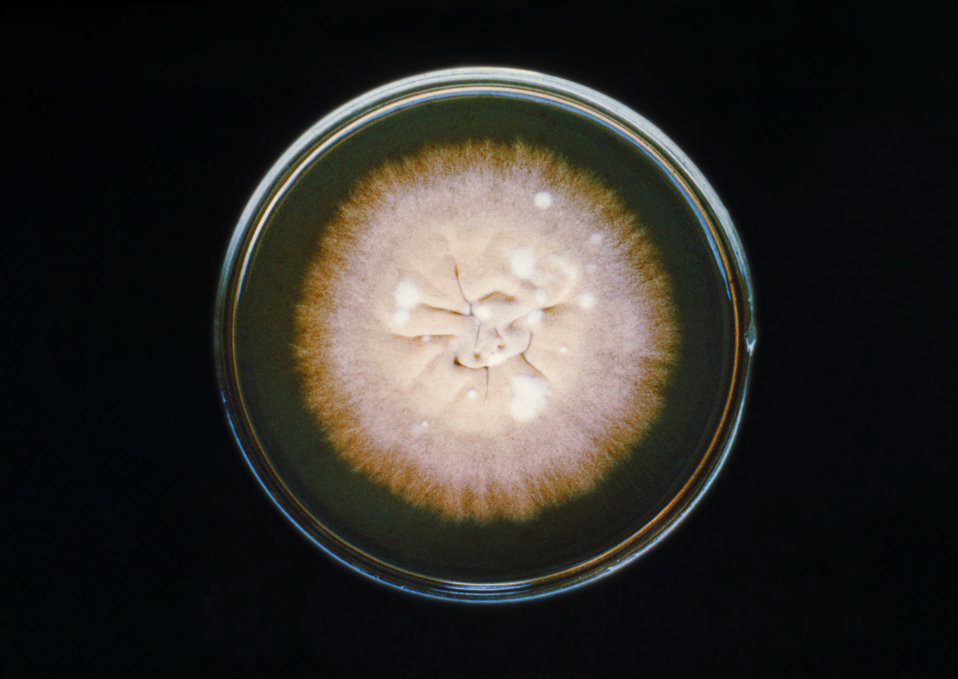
Here a Sabouraud's dextrose agar plate has cultured the fungus Epidermophyton floccosum, strain 257A.